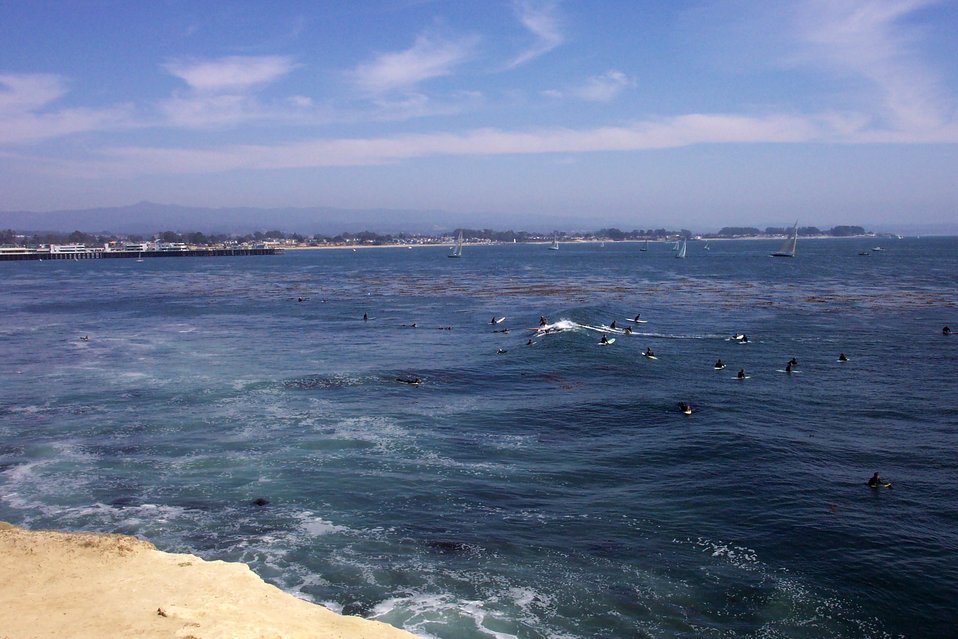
Surfers, sailboats, and the Santa Cruz wharf as seen from Lighthouse Point. Loma Prieta is the high peak in the Santa Cruz Mountains.